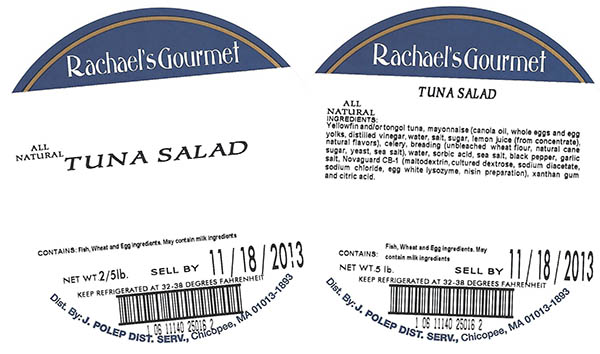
RECALLED – Prepared salads

October 24, 2013 – Product Recall – Boston Salads and Prepared Foods Recalling Ready-To-Eat Products Because of Possible Health Risk.